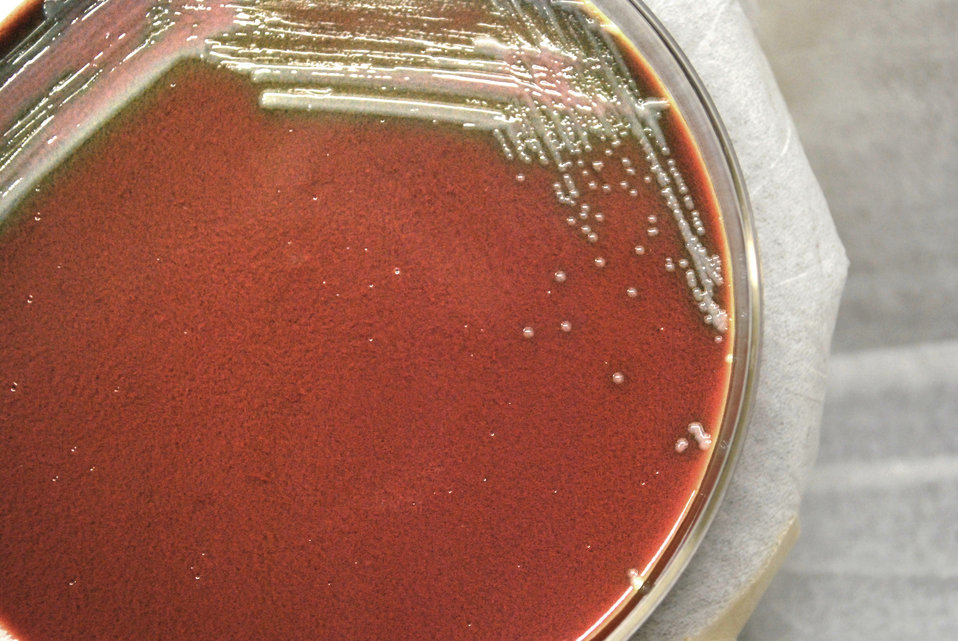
As a closer view of PHIL 12509, this photograph depicts the colonial morphology displayed by Gram-negative Francisella tularensis bacteria, which was grown on a medium of cysteine heart agar with 9% chocolatized blood (CHAB), for a 48 hour time period, at a temperature of 37�C.